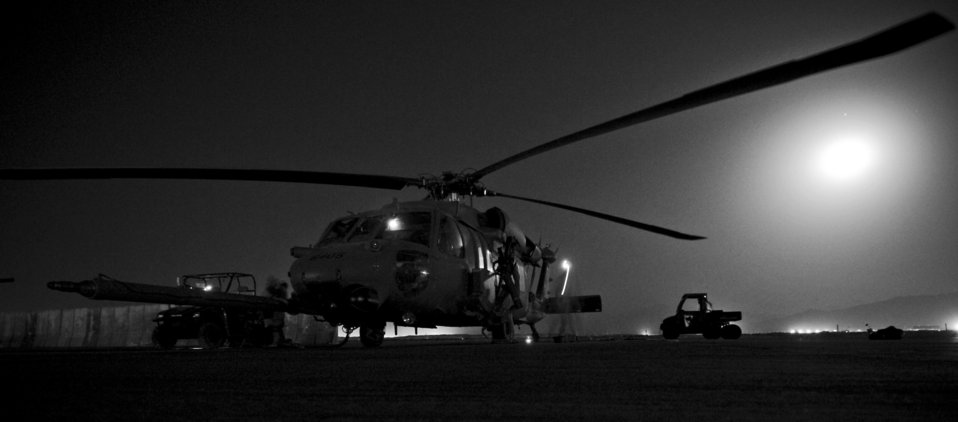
Nighttime operations

An HH-60 Pave Hawk stands ready July 17 at Bagram Air Base, Afghanistan. All HH-60Gs have an automatic flight control system, night-vision goggles with lighting and forward looking infrared system that makes it possible to conduct night operations.